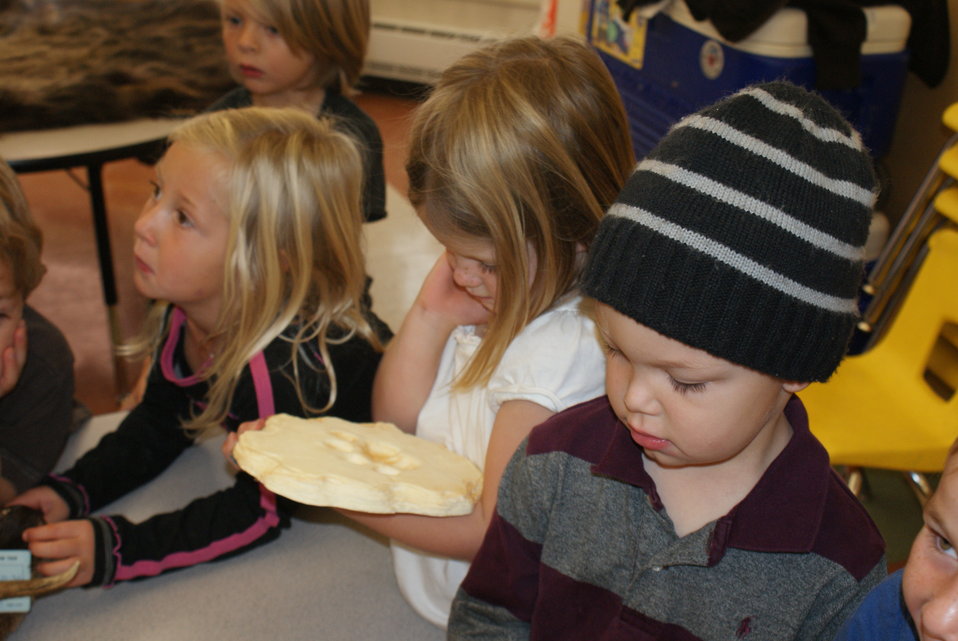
Scientists in the Community Program

U.S. Fish and Wildlife Service Mountain-Prairie Region Deputy ARD for External Affairs, Matt Kales, introduces early childhood education students at William Roberts Elementary School in Denver to some of Colorado's native and historic wildlife species.